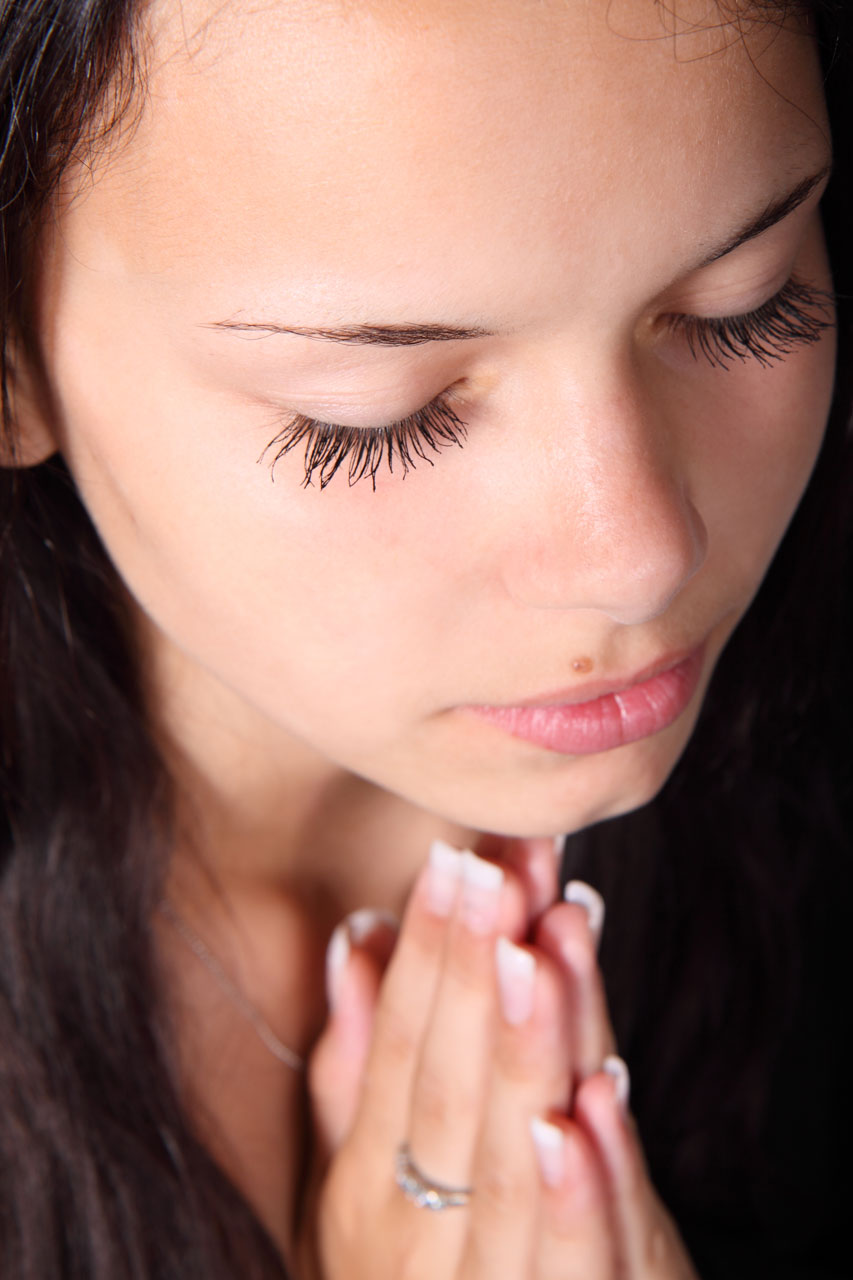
Young woman praying with her eyes closed.